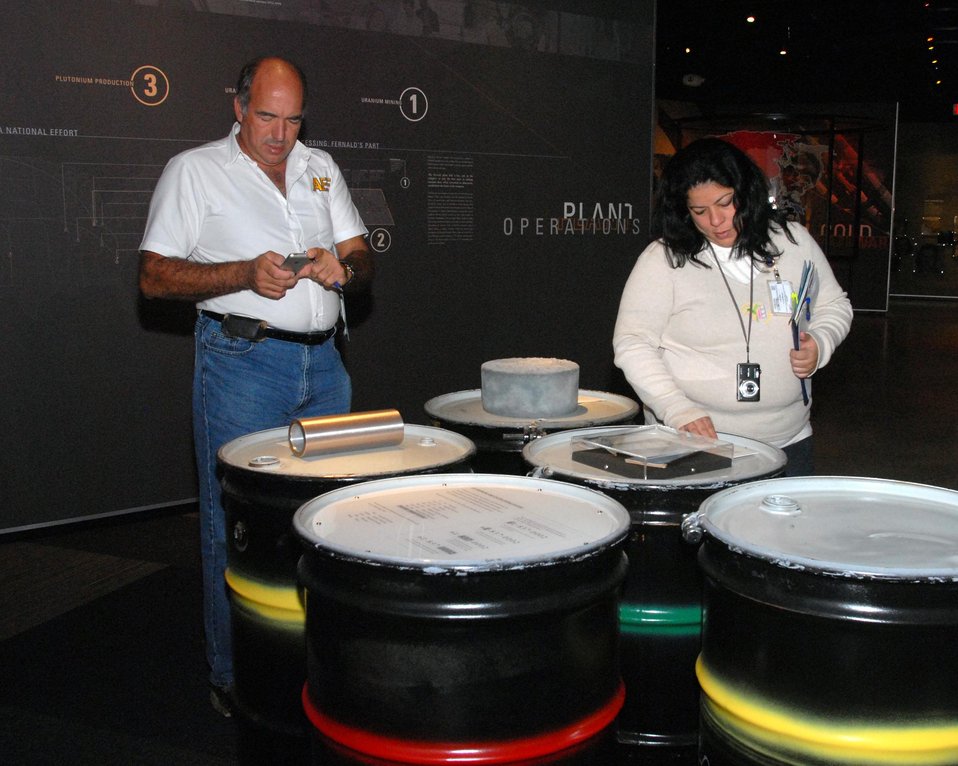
Visitors to the Fernald Preserve Visitors Center exhibit area read about the Fernald Site's Production era.